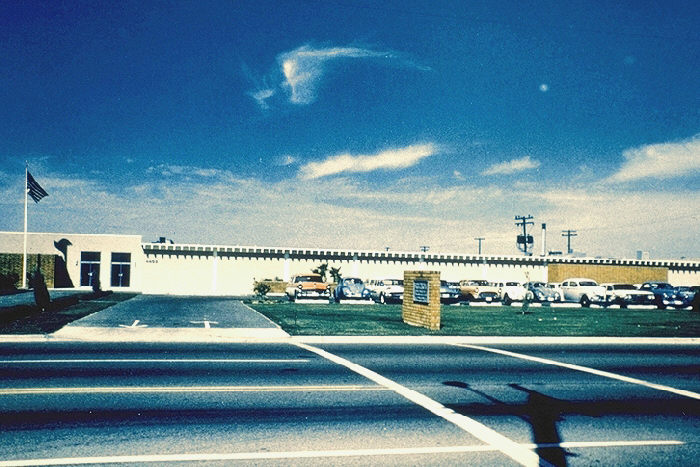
This 1979 image depicted a CDC Field Station located in Phoenix, Arizona.